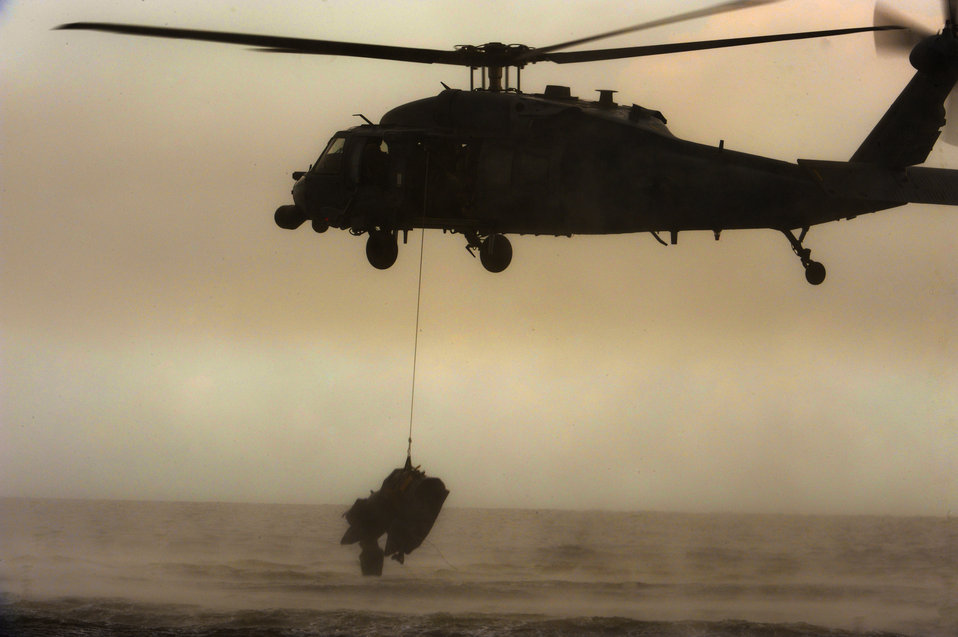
Water rescue

A Zodiac F470 watercraft is deployed by an HH-60 Pave Hawk from the 41st Rescue Squadron at Moody Air Force Base, Ga., during water rescue training in the Gulf of Mexico on Aug. 14, 2012. The Zodiac F470 can be inflated in less than five minutes.